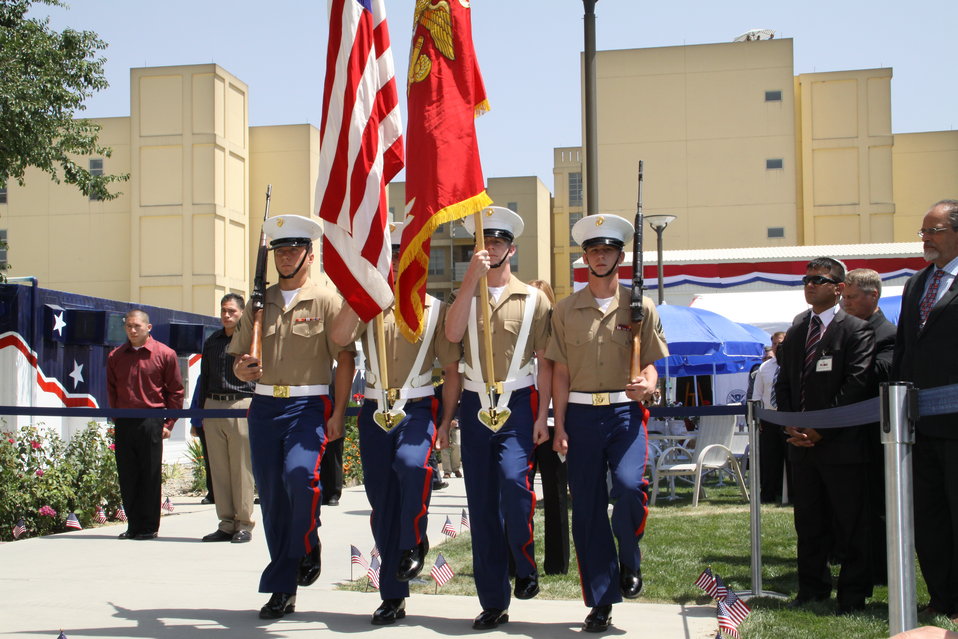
Kabul Official July 4th Celebration